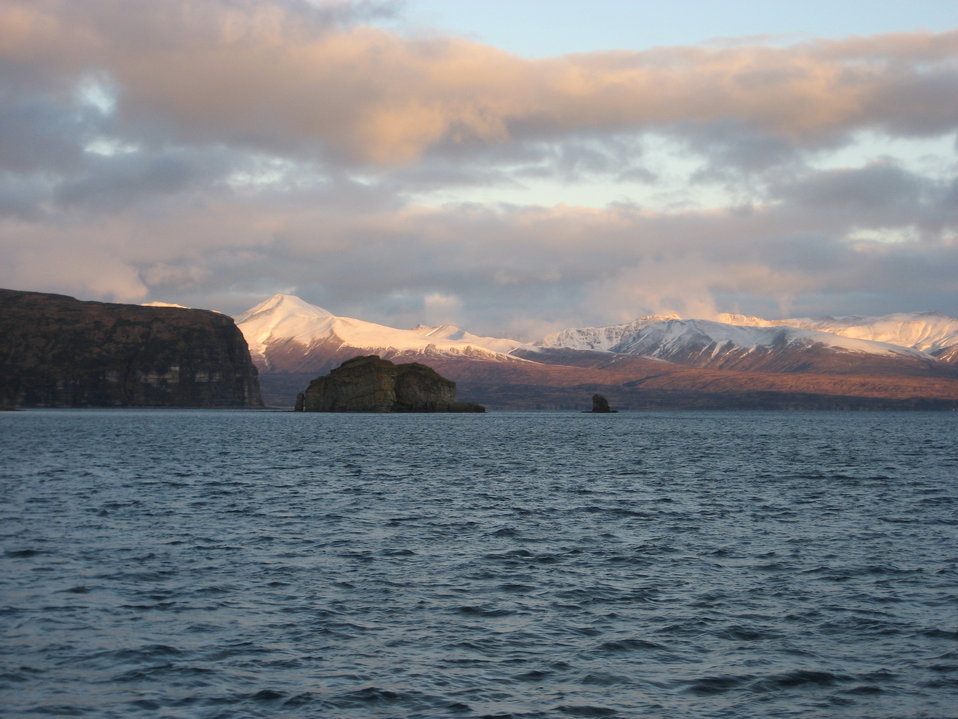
A scene along the Alaska Peninula.